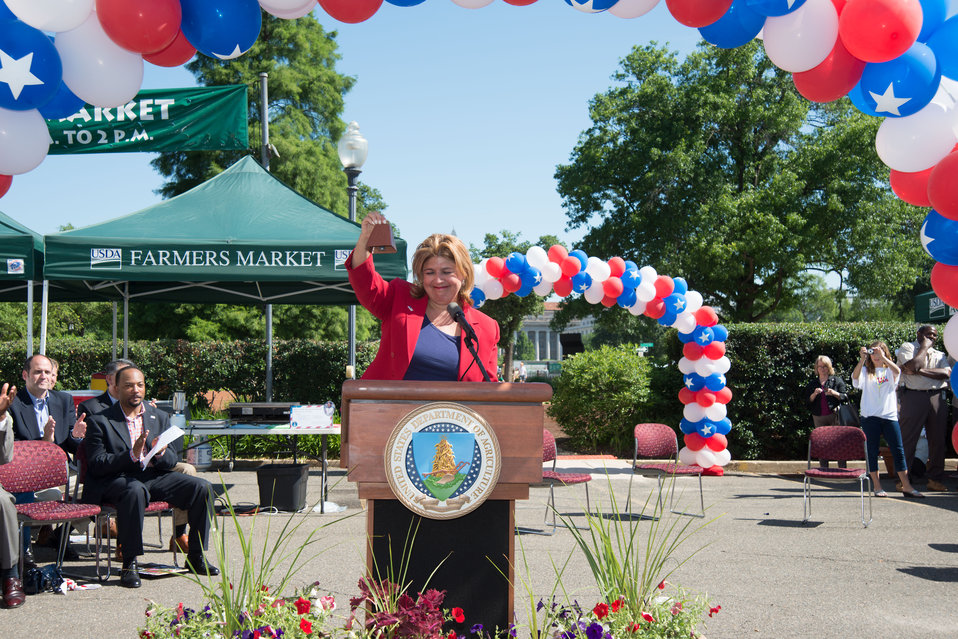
U.S. Department of Agriculture (USDA) Agricultural Market Service (AMS) Administrator Anne Alonzo rings the bell to open USDA’s 2014 Farmers Market in the east parking lot of USDA in Washington, D.C. on Friday, Jun. 6, 2014.